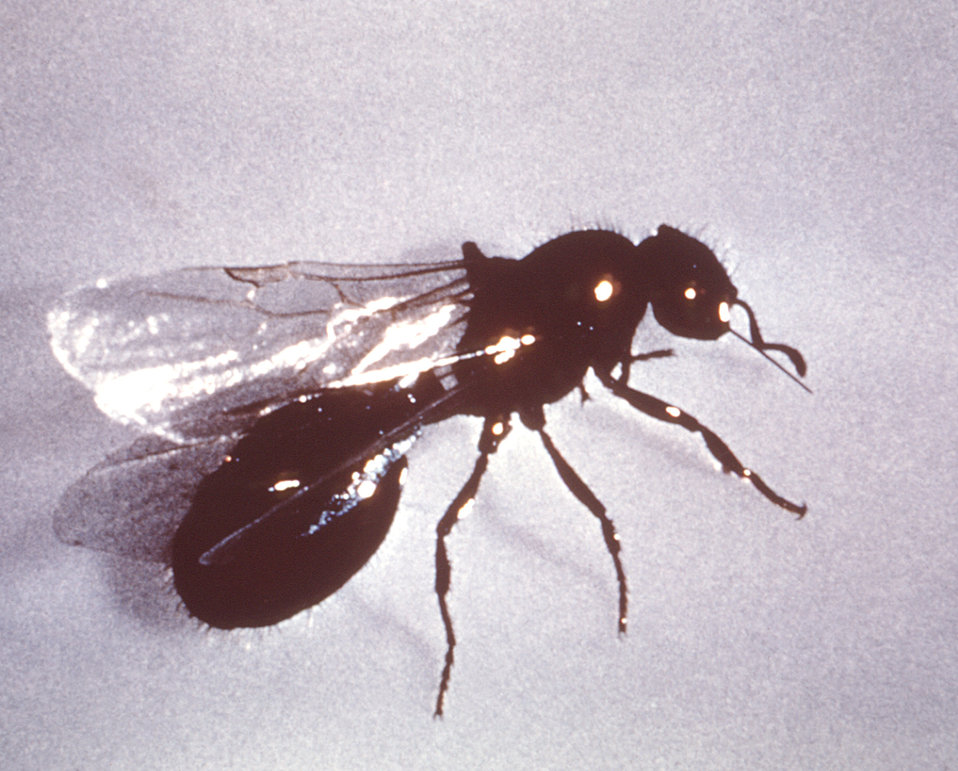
This image depicts a lateral view of an imported winged queen fire ant, Solenopsis saevissima var. richteri.